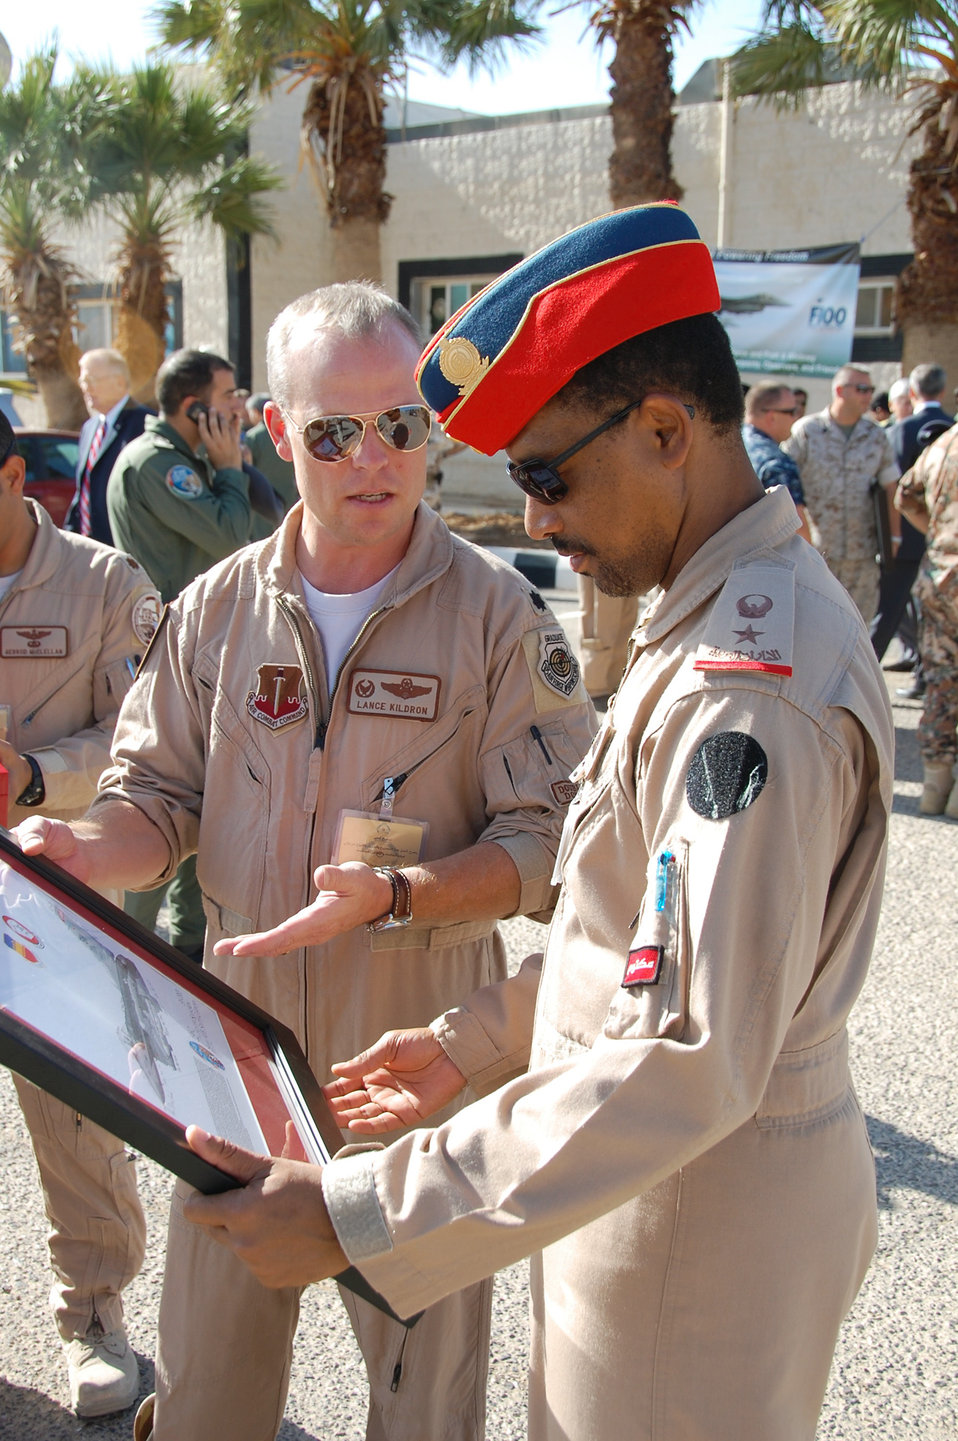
Jordan, US exercise

Maj. Adel H. Bin Sanqour, of the United Arab Emirates air force, receives an appreciation plaque from Lt. Col. Lance Kildron Nov. 2, 2010, after the closing ceremonies at Falcon Air Meet 2010 in Azraq, Jordan. Colonel Kildron is the 77th Fighter Squadron commander.